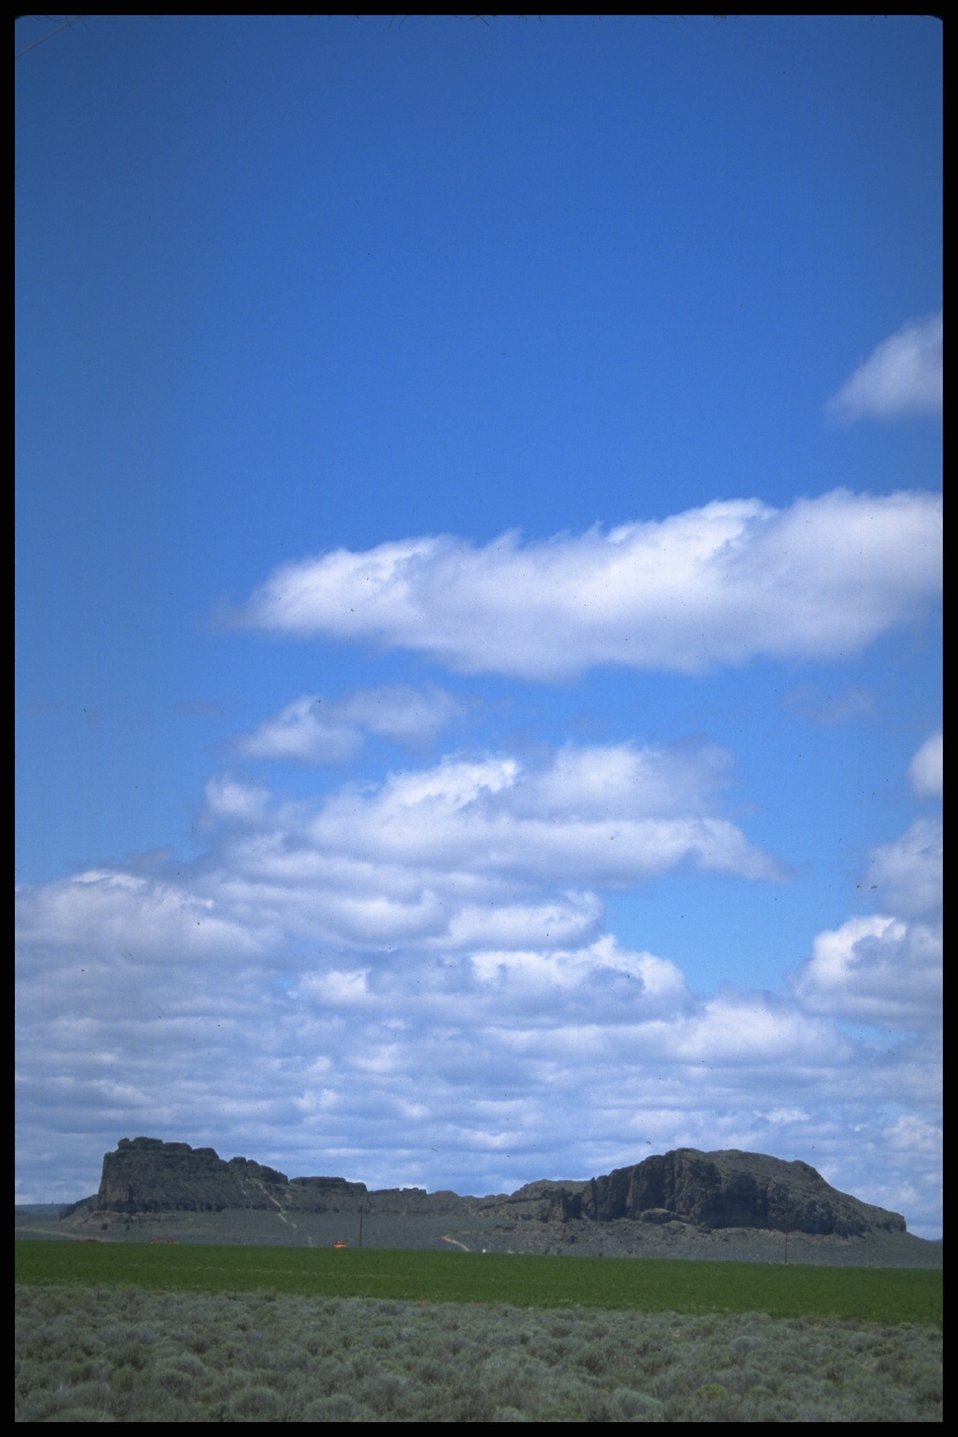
Far shot of Ft. Rock, Lakeview District.